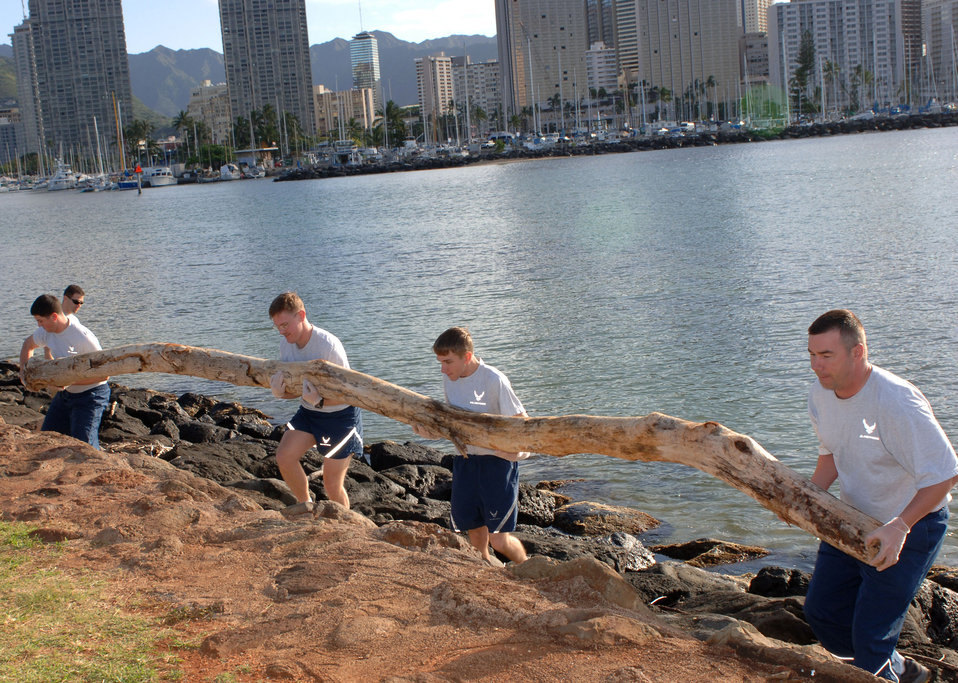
Hickam Airmen serve Oahu community during Jungle Day

Airman Chris Yanchun, (left to right) Maj. Matthew Stratton, Airman 1st Class Darrin Potter and Master Sgt. Donavon Schaefer lift a large driftwood log from the rocky shoreline March 13 along Ala Moana Beach Park in Honolulu. The Airmen volunteered for the beach cleanup as part of 13th Air Force's Jungle Day, a tradition for the Hickam Air Force Base unit that occurs every Friday the 13th.